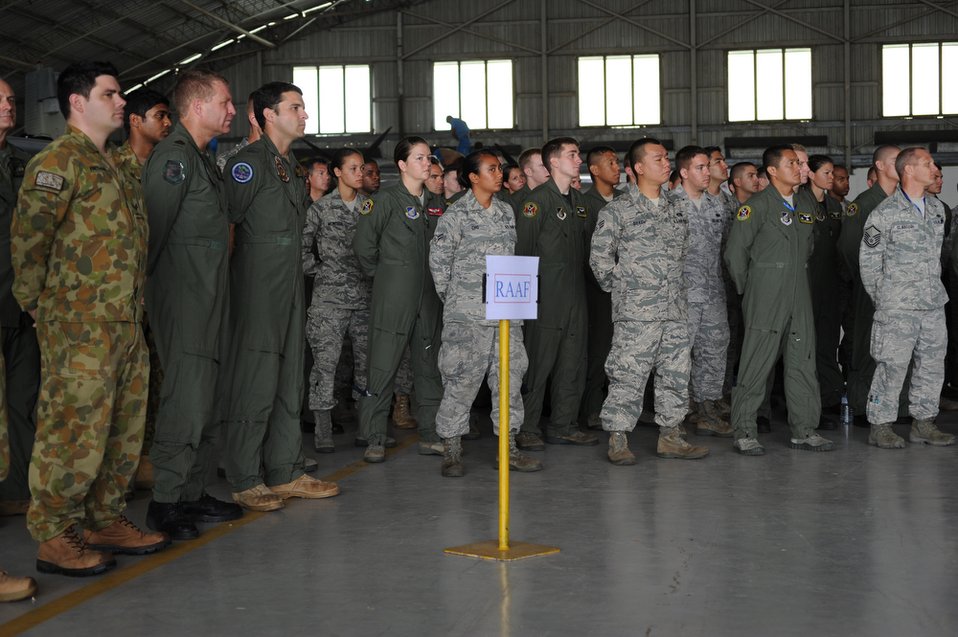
PACIFIC AIRLIFT RALLY 2011

More than 300 military members from the Royal Australian Air Force, Sri Lankan Air Force, Malaysian Air Force and U.S. Air Force gathered together for the start of Pacific Airlift Rally 2011 Aug. 22, 2011, at Ratmalana Airport, Colombo, Sri Lanka. PAR is a Pacific Air Force sponsored, biennial multilateral tactical military airlift symposium and exercise held in Colombo, Sri Lanka.